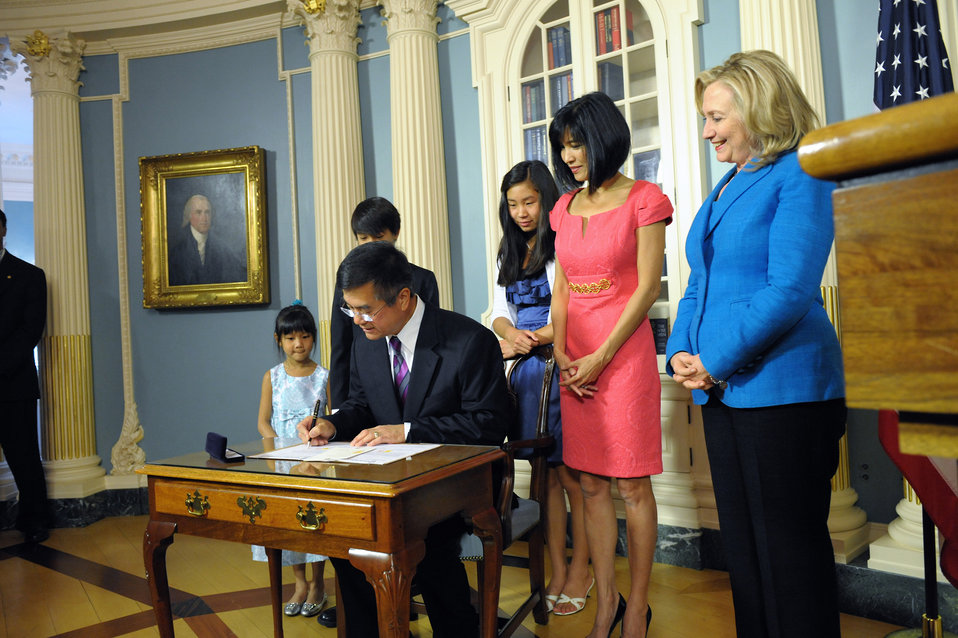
Gary Locke Signs the Papers to Become U.S. Ambassador to the People’s Republic of China

U.S. Secretary of State Hillary Rodham Clinton officiates the Swearing-In Ceremony for the Honorable Gary Locke, U.S. Ambassador to the People’s Republic of China, at the U.S. Department of State in Washington, D.C., on August 1, 2011.